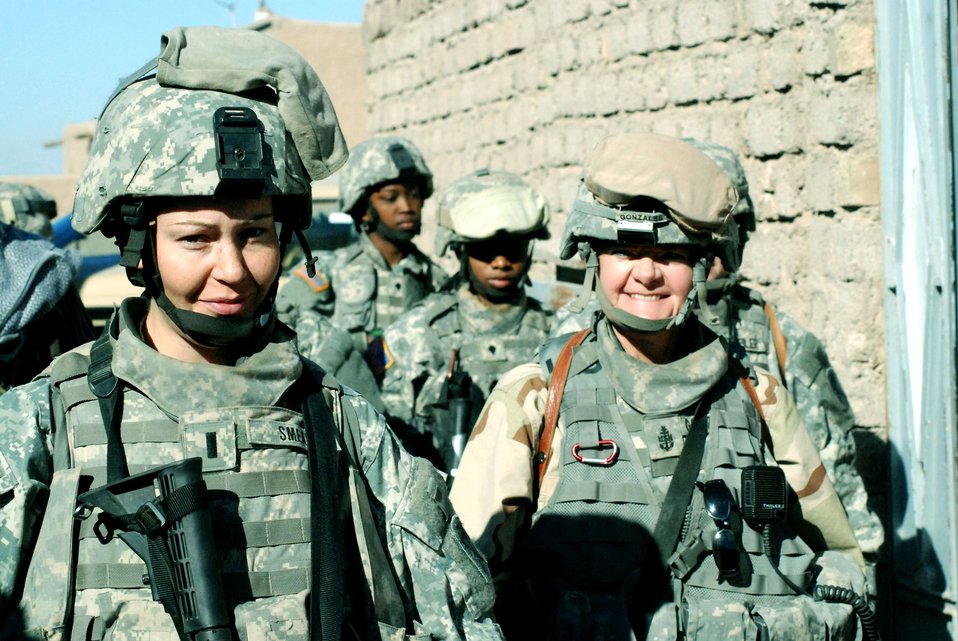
Servicemembers reach out to Afghanistan women

1st Lt. Brianna Smeal (left) and Navy Senior Chief Petty Officer Darlene Gonzales lead other U.S. military women Sept. 29 to an elementary school in Herat, Afghanistan. Both are assigned to the Afghan Regional Security Integration Command-West at Camp Stone in Herat. The women met with female teachers to drop off donated and requested supplies and to discuss ways coalition and the Afghan national security forces could be of assistance to the school and to Afghan women in general.